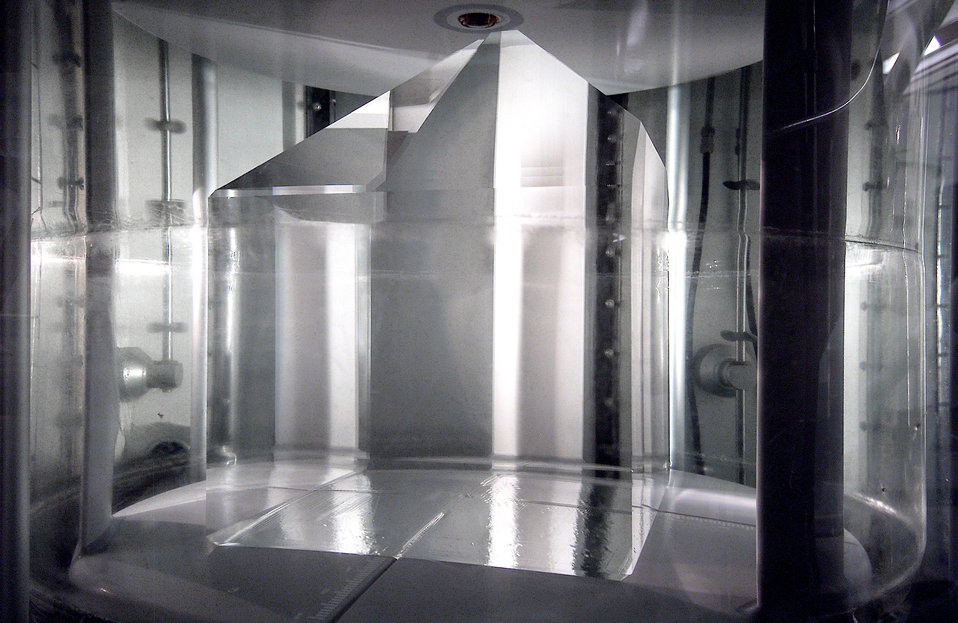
The National Ignition Facility crystals begin as a one-inch cube known as a seed crystal, placed in a six-foot-high tank filled with nearly a metric ton of supersaturated potassium dihydrogen phosphate or KDP.

As it rotates on a turntable in the tank, the crystal begins to grow. In just two months, the crystal grows to be as large as 800 pounds; with conventional methods of growing crystals, this process would take nearly two years. When complete, the crystal is carefully removed from the tank. Then it is measured; and finally it is cut into 40 by 40 centimeter plates to be used to focus, transmit and direct laser beams on their way to the NIF target chamber.